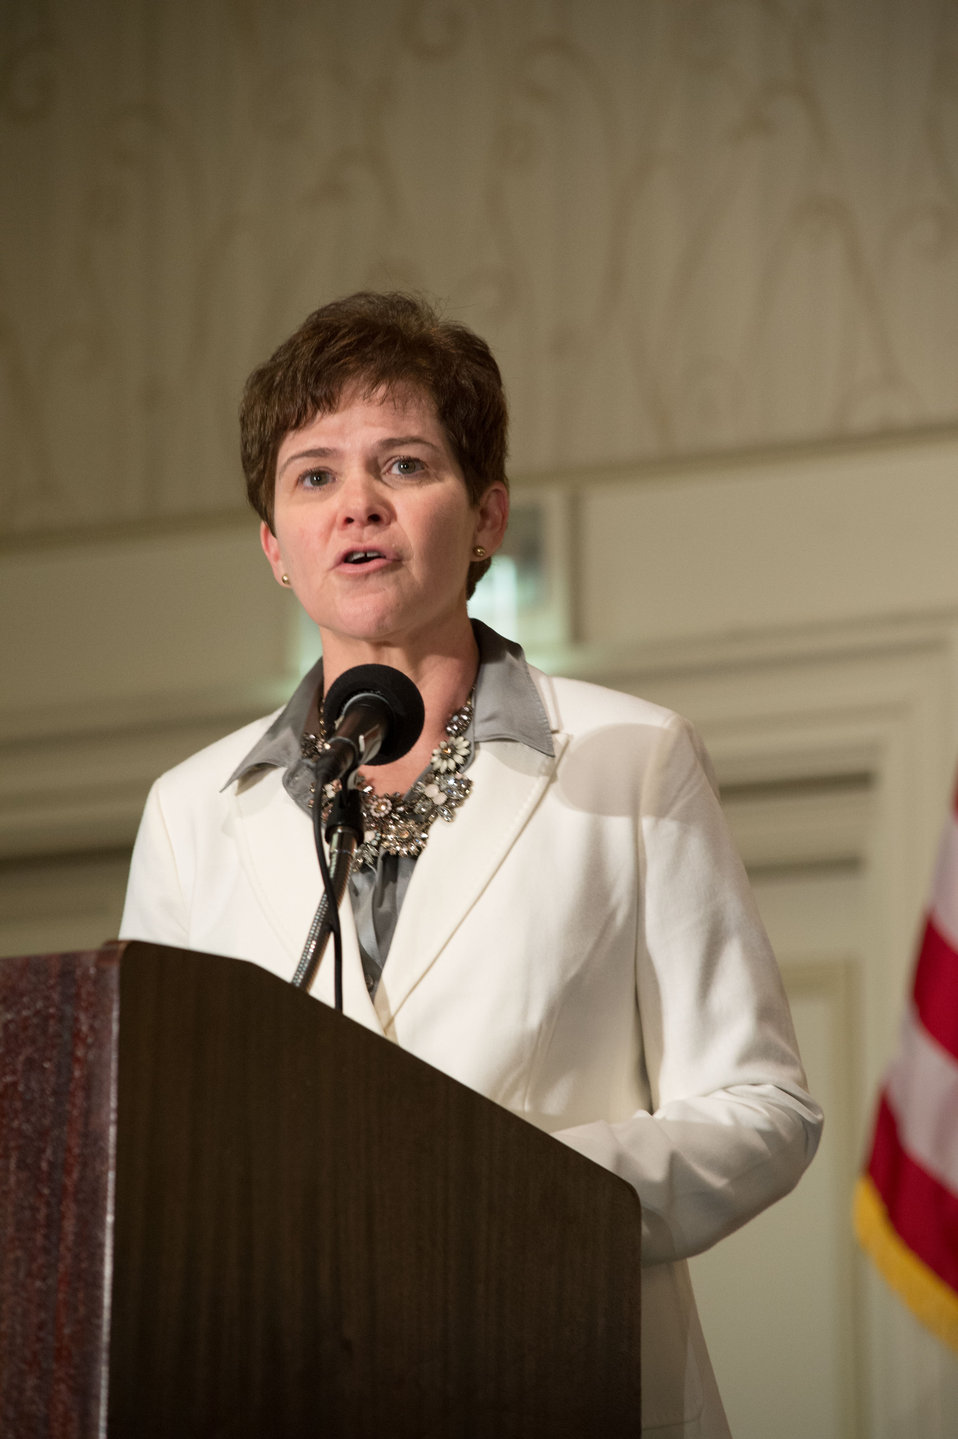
Agriculture Deputy Secretary Krysta Harden at the 2014 Agricultural Outlook Conference on Thursday, Feb. 20, 2014 in Arlington, VA. The U.S. Department of Agriculture's (USDA) annual Agricultural Outlook Forum brings together the agricultural community to discuss policy, trade, science, rural development, and the economic outlook for the coming year. The Forum also focuses on forestry, health and nutrition issues, and the changing dynamics and face of rural America.